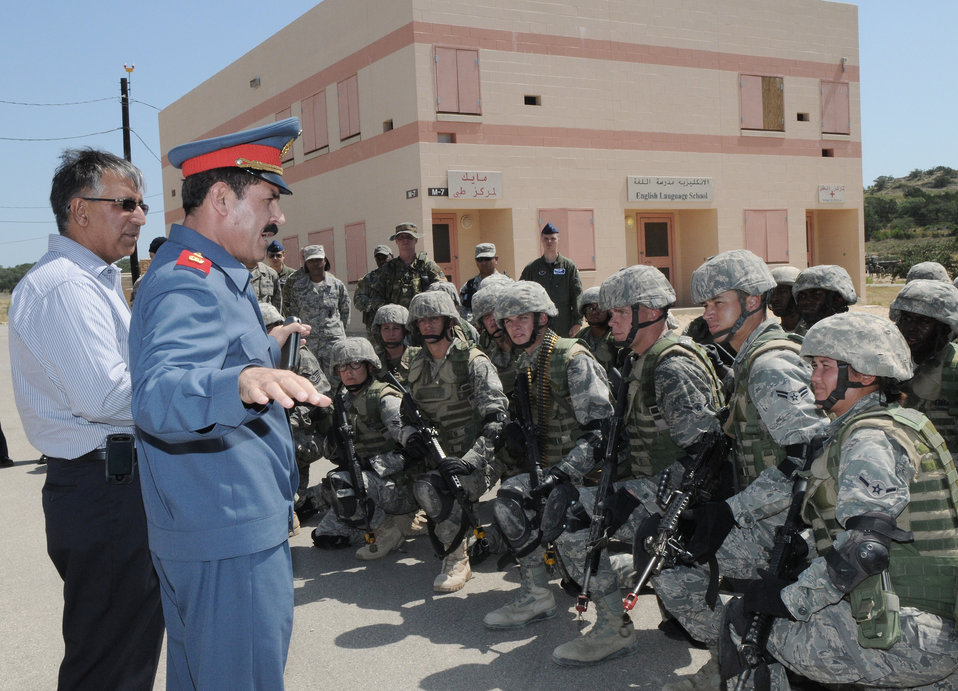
Afghan nation army air corps commander travels to AETC to strengthen training path

Afghan national air army corps Maj. Gen. Mohammad Dawran speaks to security forces trainees at the Military Operations on Urban Terrain Training Facility July 16 at Camp Bullis, Texas. General Dawran is the Afghan national air army corps commander. The general's visit served to strengthen the training partnerships between the two air forces.